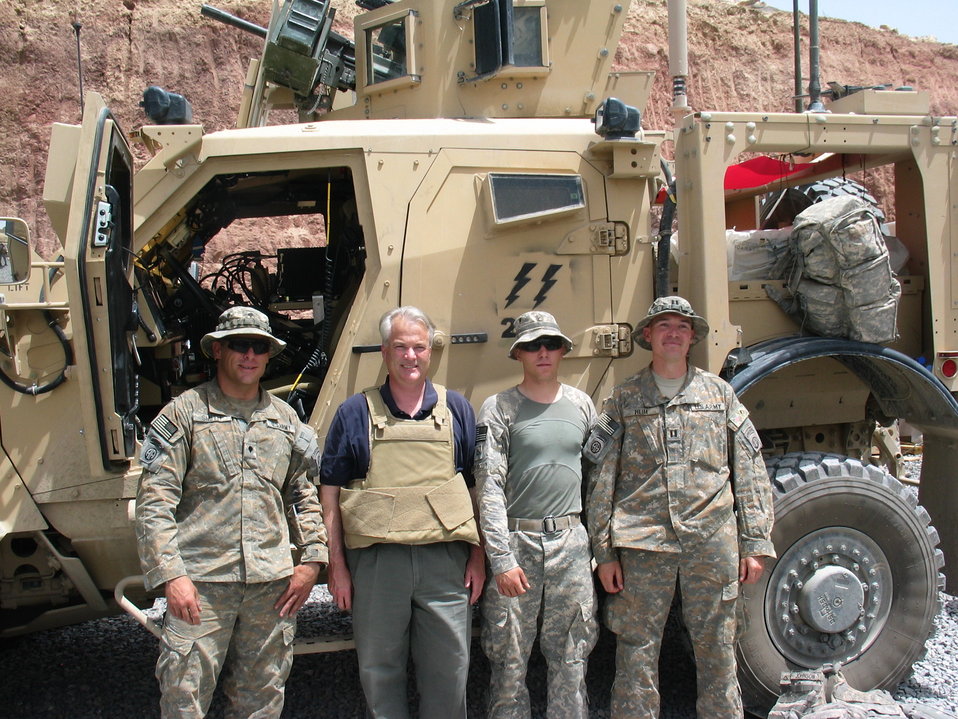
CODEL Berman